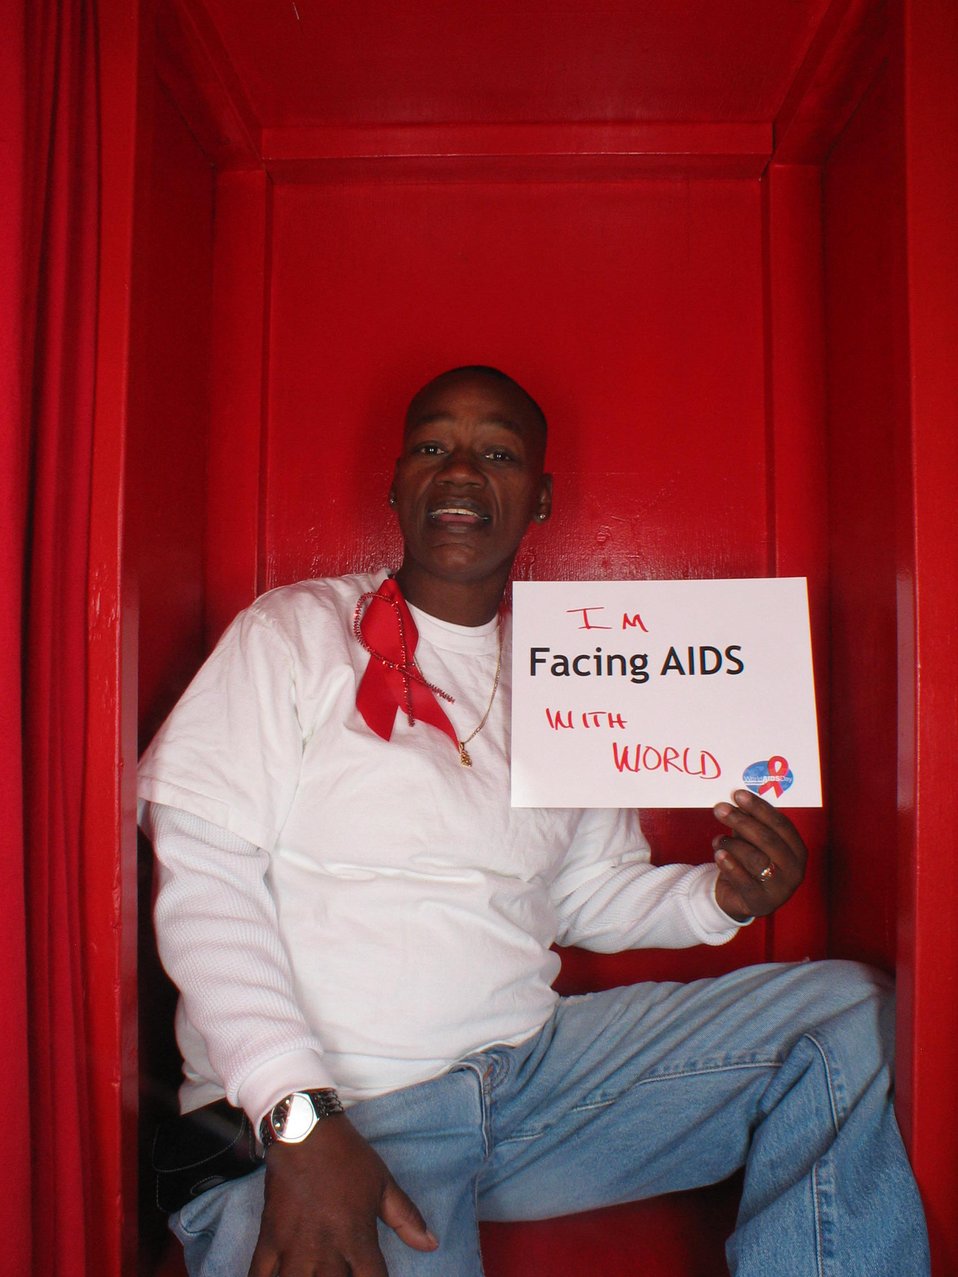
I'm Facing AIDS for the world.